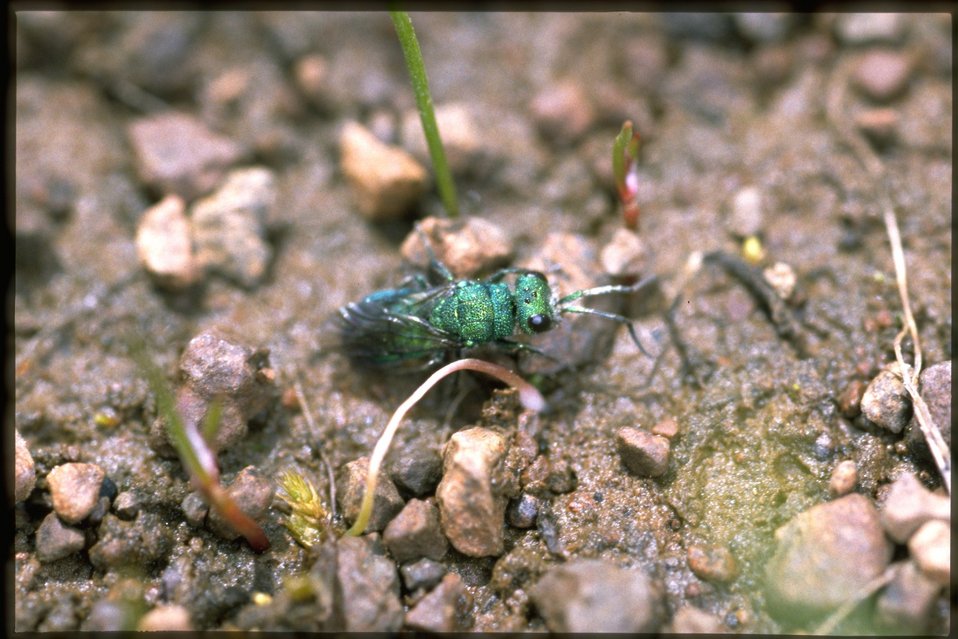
Medium shot Sweat Bee.